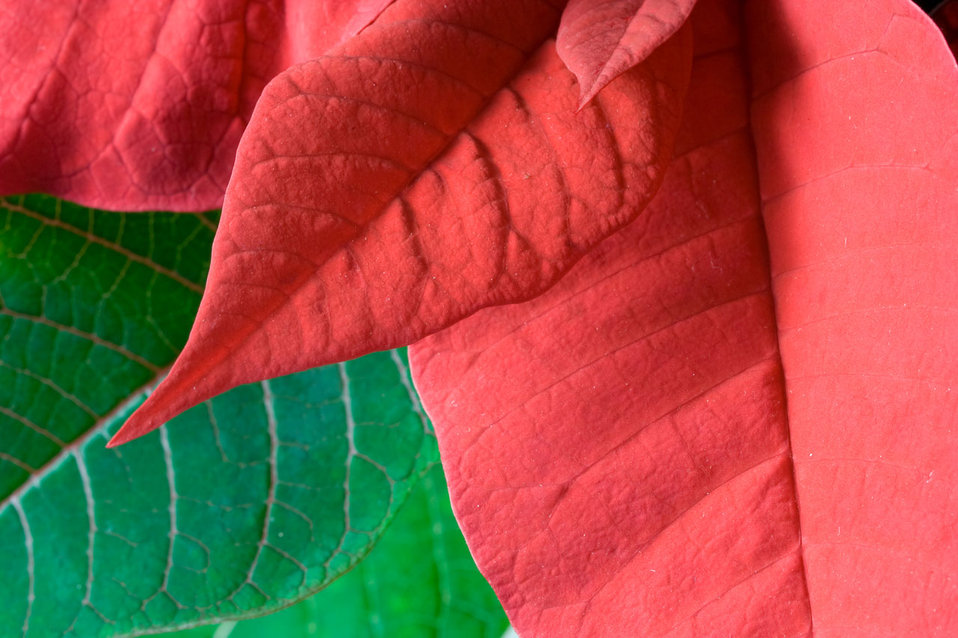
Poinsetta leaves

Detailed picture of green and red leaves.